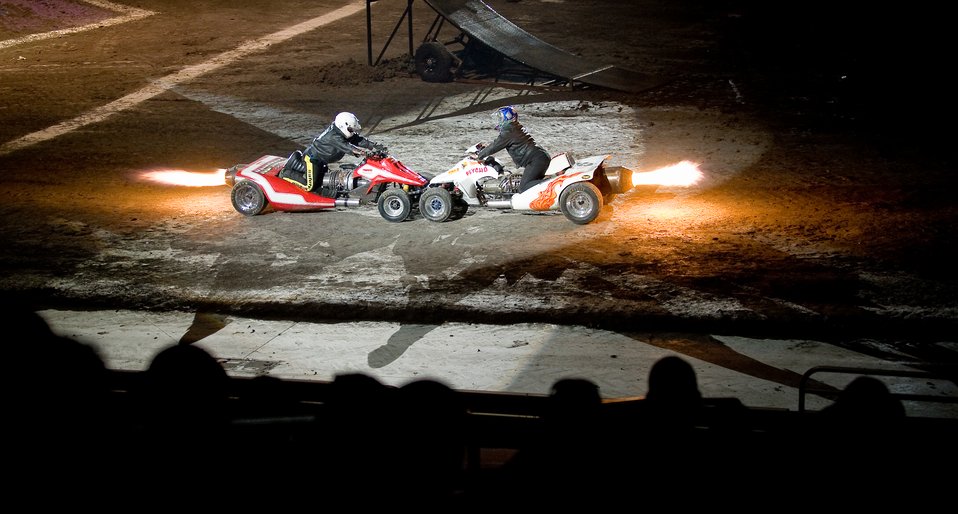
AF flies high at Monster Jam

Jet powered quads were demonstrated at the 2009 Monster Jam event at the Alamodome in San Antonio Jan 11.